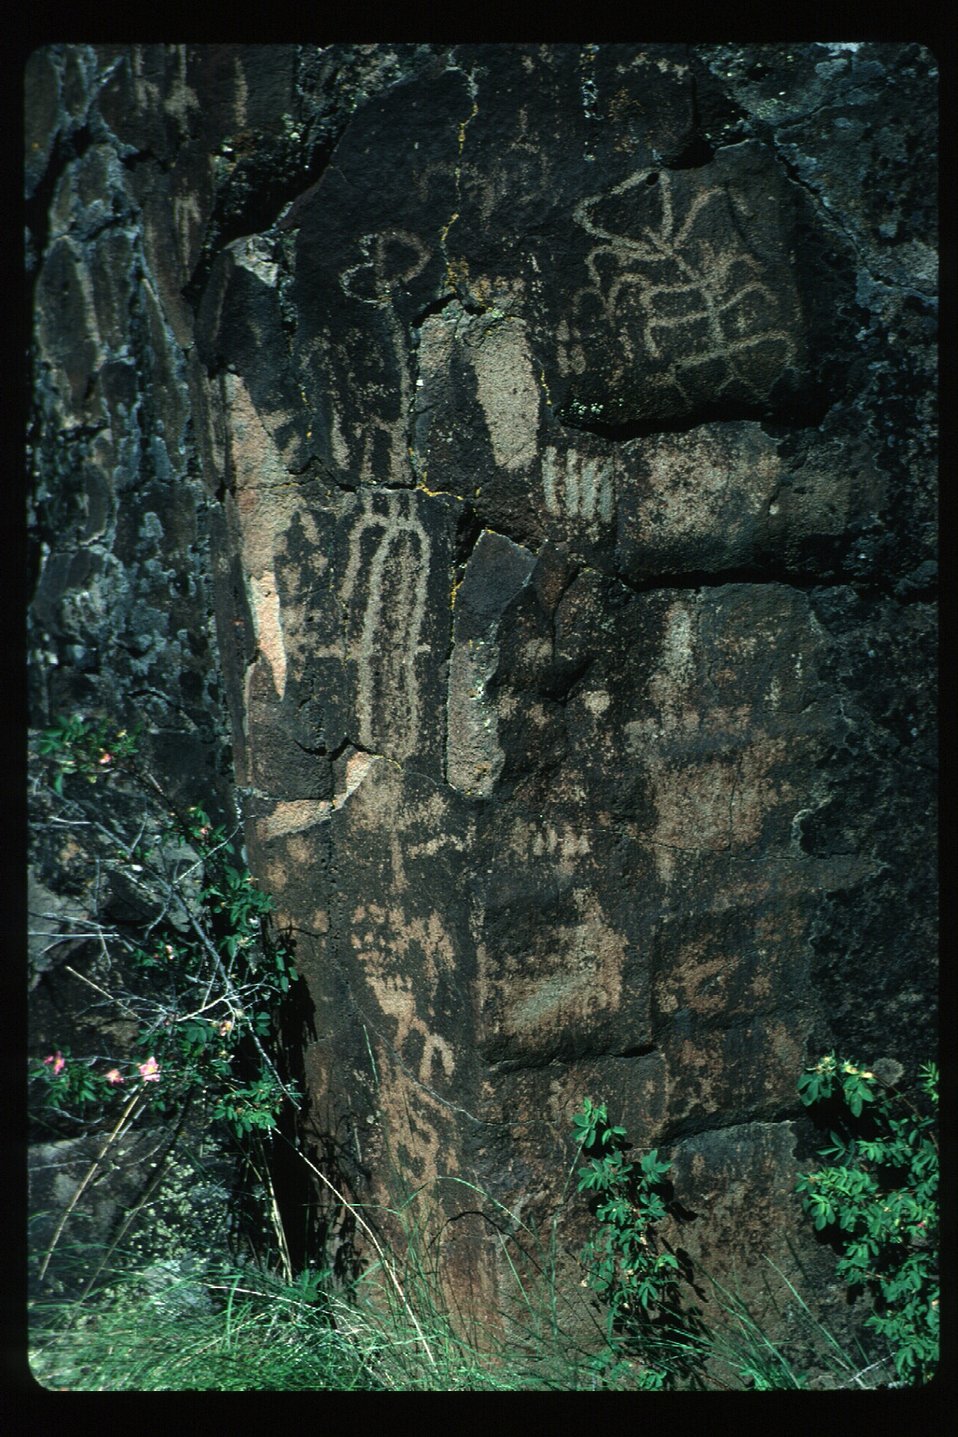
Camas Creek petroglyphs Archeology LSRD Lower Snake River District